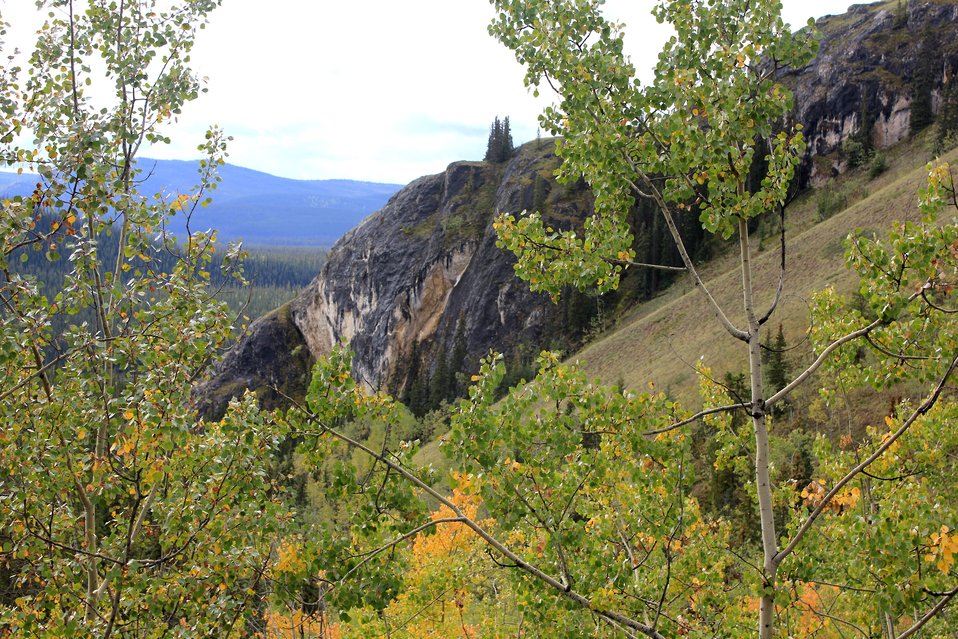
A view along the Dempster Highway while traveling above the Yukon River. This is known as the Den of the Giant Frog, Ts'al Cho An in northern Tutchone, an Athabascan native language. This is shown on Chief Kohklux's map of the Yukon.